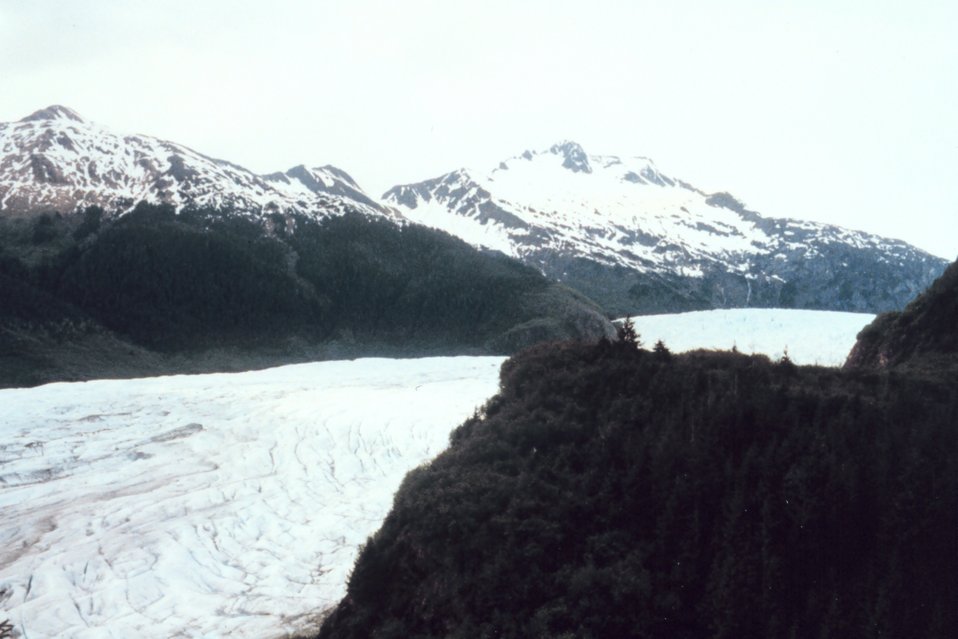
Mendenhall Glacier